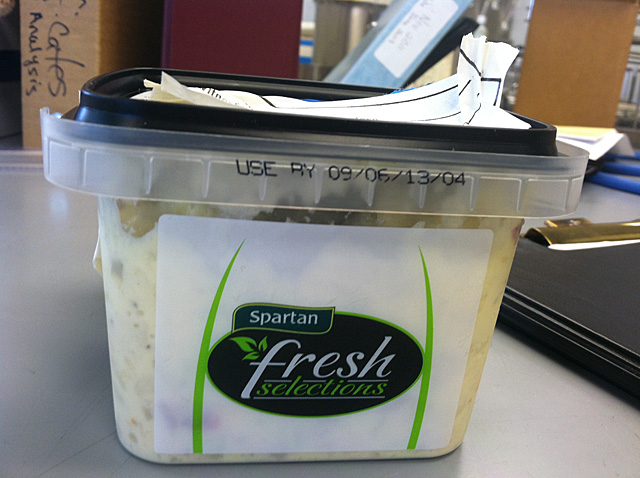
RECALLED – Spartan Fresh Selections American Potato Salad

August 29, 2013 – Product Recall – Spartan Fresh Selections American Potato Salad.